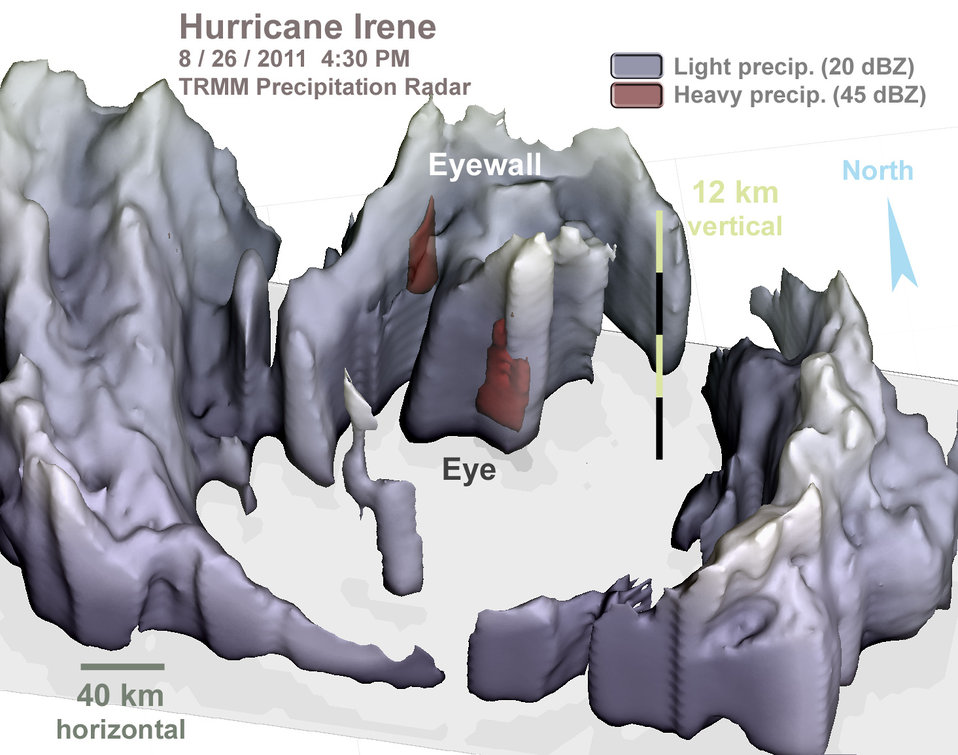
National Aeronautics and Space Administration, (NASA): Hurricanes/Tropical Cyclones